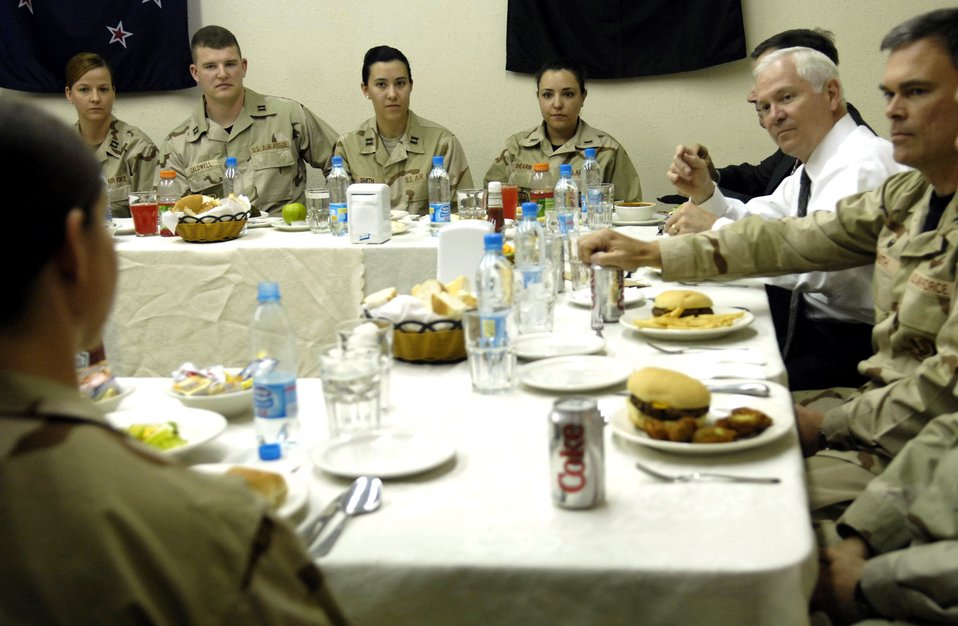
Secretary Gates pays a visit

Secretary of Defense Robert M. Gates meets with junior Air Force officers deployed to Manas Airbase, Kyrgyzstan, June 5. Secretary Gates held the informal meeting to hear directly from the troops about their concerns and to answer their questions.